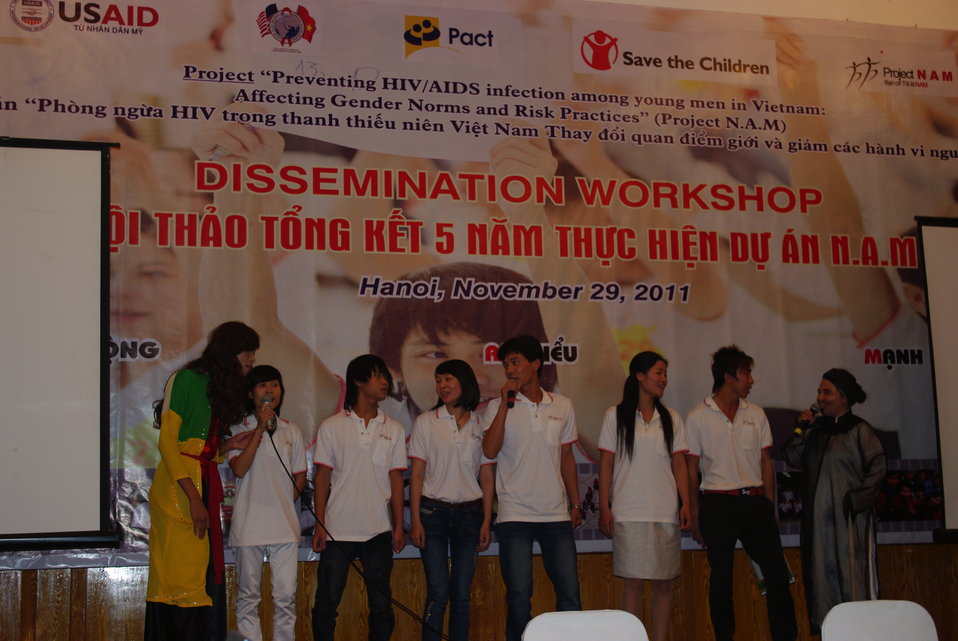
USAID Supports HIV Awareness among Street Youth and Young Men

Trainers and peer educators tell their stories on November 29, 2011, in Hanoi, VietnamTrainers and peer educators tell their stories on November 29, 2011, in Hanoi, Vietnam